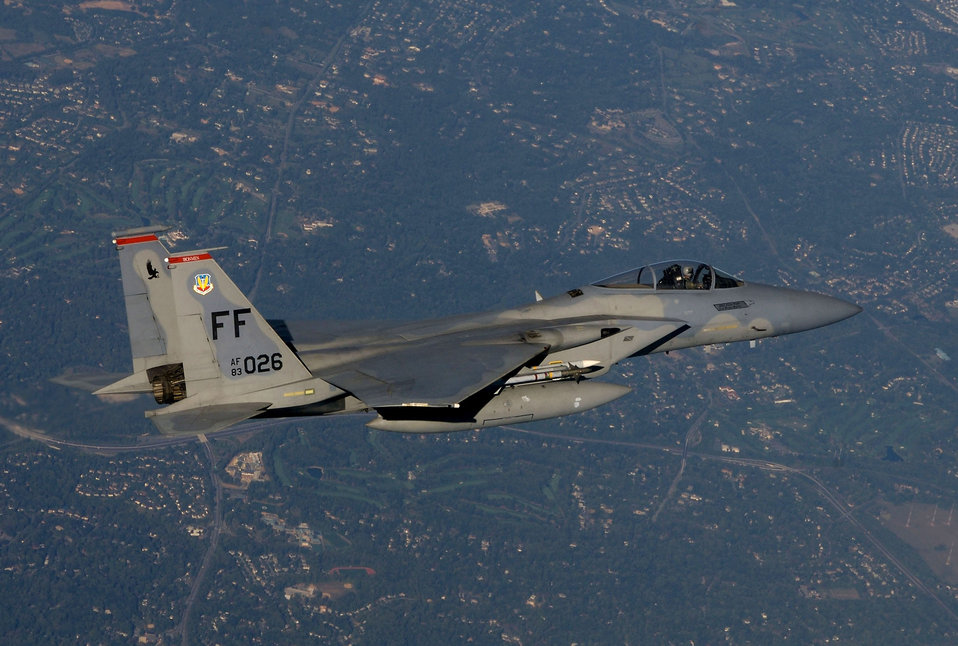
Keeping watch over the nation

Capt. Matt Buckner, an F-15 Eagle pilot assigned to the 71st Fighter Squadron at Langley Air Force Base, Va., flies a combat air patrol mission Oct. 7 over Washington, D.C., in support of Operation Noble Eagle.